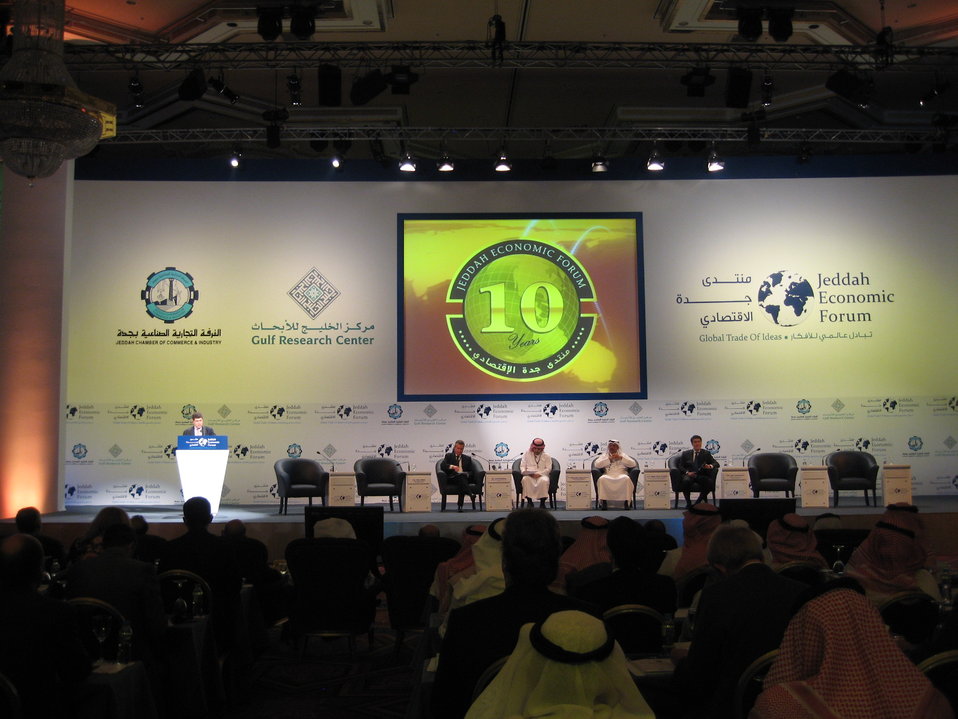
Deputy Secretary Wolin at the Jeddah Economic Forum

Deputy Secretary Wolin addresses the Jeddah Economic Forum's 'Global Economic Governance after the Crisis' panel in Jeddah, Saudi Arabia on Sunday, February 14, 2010.